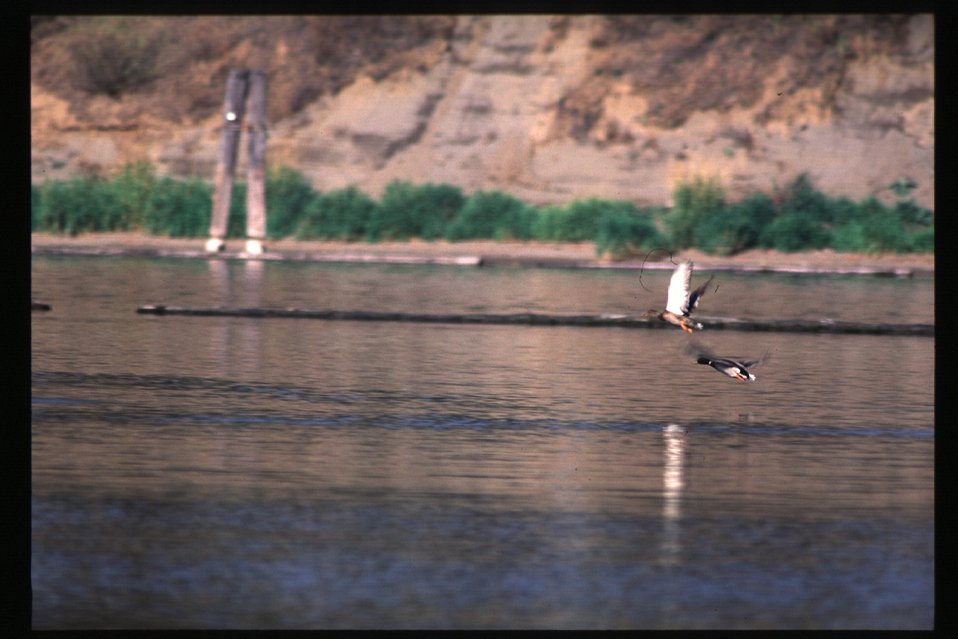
Ducks landing from Scenic Blackwell Island Couer d'Alene Field Office UCSC Upper Columbia Salmon Clearwater District